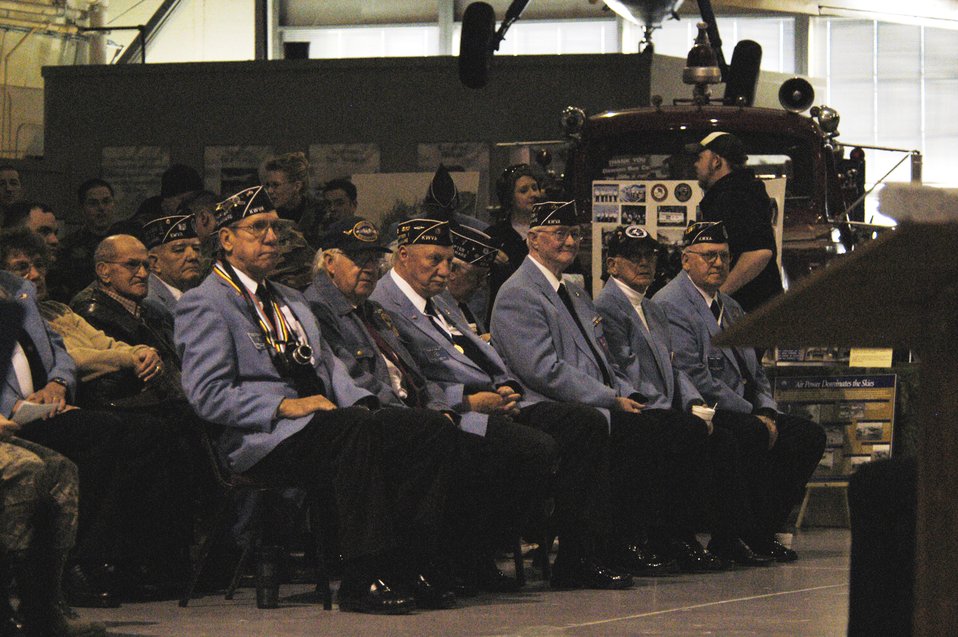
Remembering the chosin

Korean War Veterans Association Delaware Chapter 1 members attend the 9th Annual Ruck March held at the Air Mobility Command Museum Feb. 2.